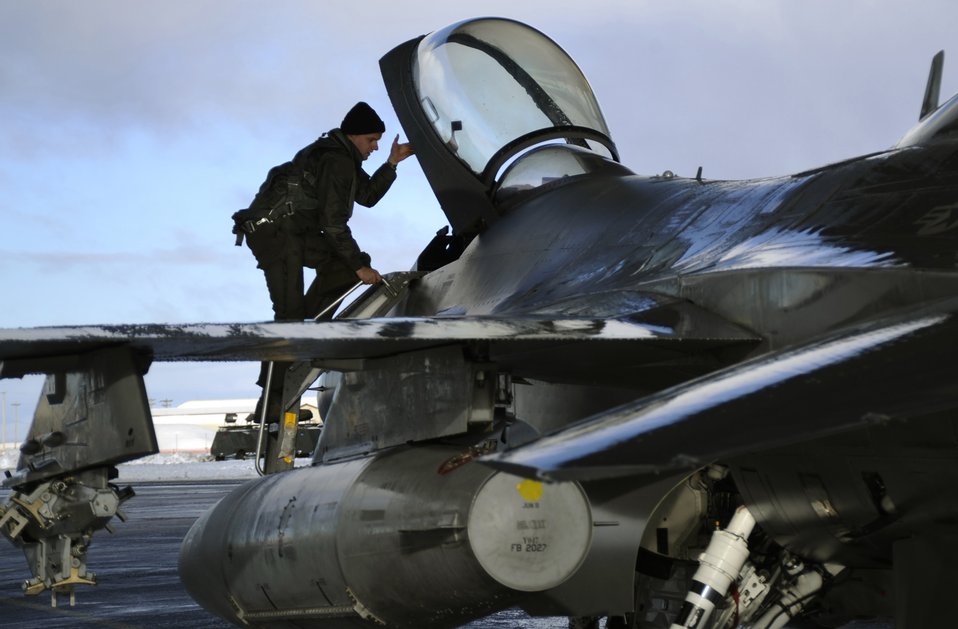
A snowy ride

Lt. Col. Christian Robert, a pilot with the 388th Fighter Wing at Hill Air Force Base, Utah, climbs into the cockpit of an F-16 Fighting Falcon before takeoff Dec. 15, 2010.